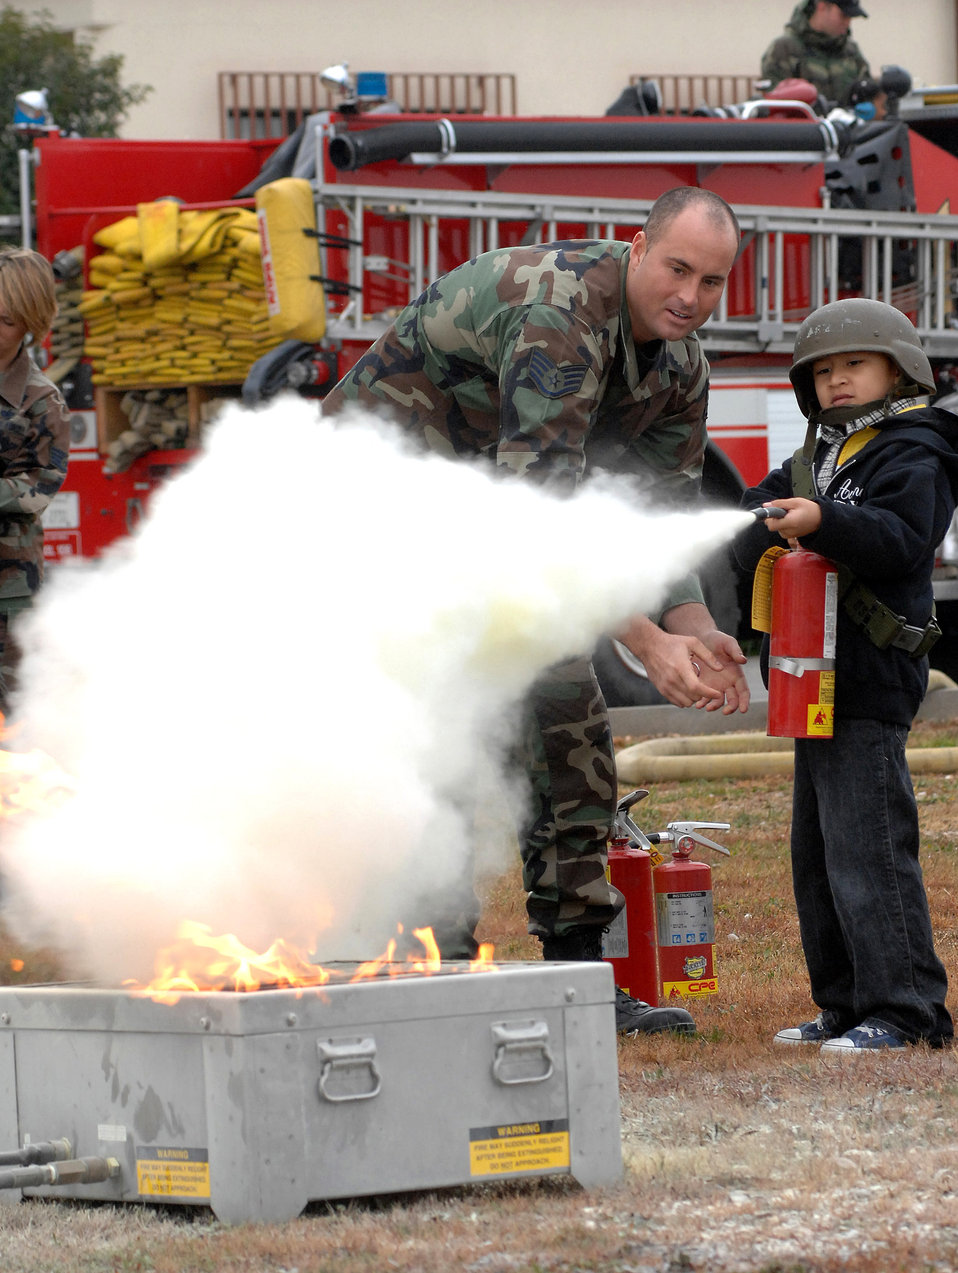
Warrior for a day

Staff Sgt. Michael Johns helps 2nd grader Jacob Calderon use a fire extinguisher during a children's deployment day Oct. 24 at Aviano Air Base, Italy. Sergeant johns is a firefighter with the 31st Civil Engineer Squadron. Jacob is the son of Tech. Sgt. Ridolfo Calderon and Venus Calderon.